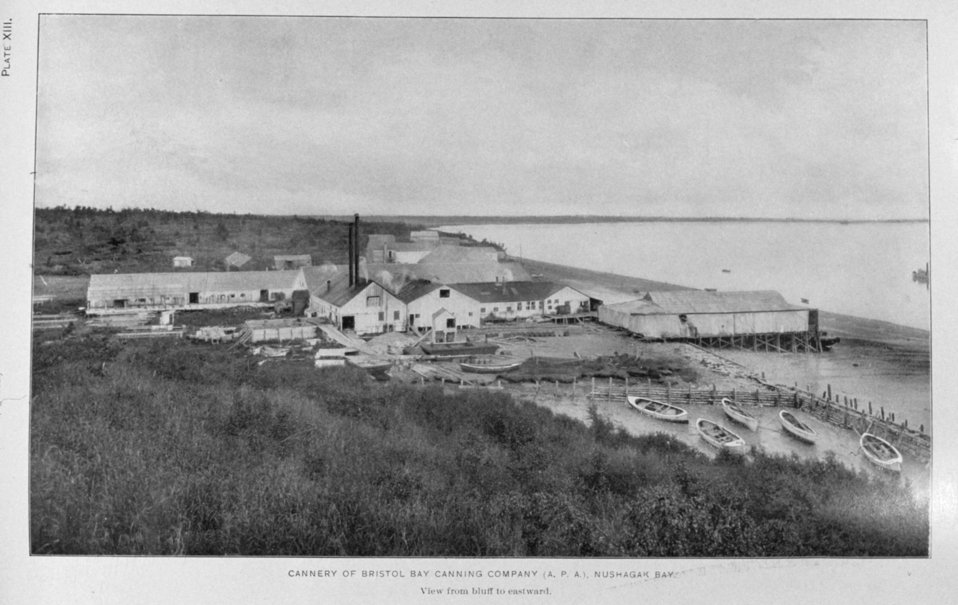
Cannery of Bristol Bay Packing Company (A.P.A.) Nushagak Bay. In: 'Alaska Salmon Investigations,' by Jefferson F. Moser, p. 202, 1902. Washington , Government Printing Office. Library Call No. G945 M98.